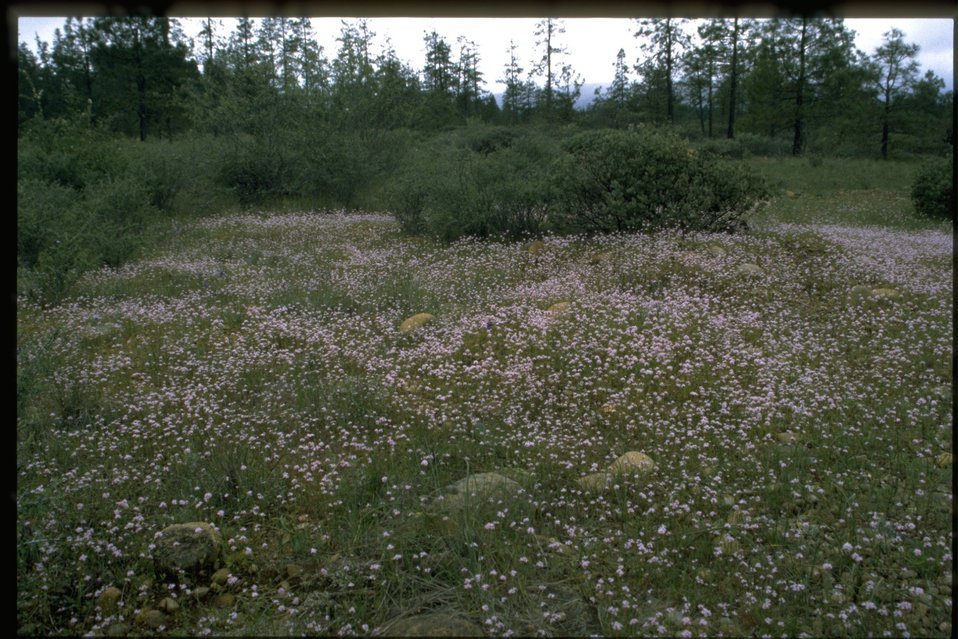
Farshot of Plectritis wildflowers.